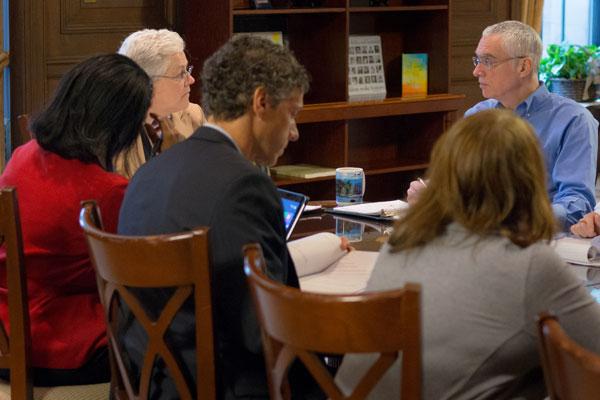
Day in the Life - April 4, 2014

8:40 am - Each morning McCarthy meets with senior staff in her office to review the issues of the day ahead. Here, she and EPA Deputy Administrator Bob Perciasepe confer on an upcoming policy announcement. (4/12)